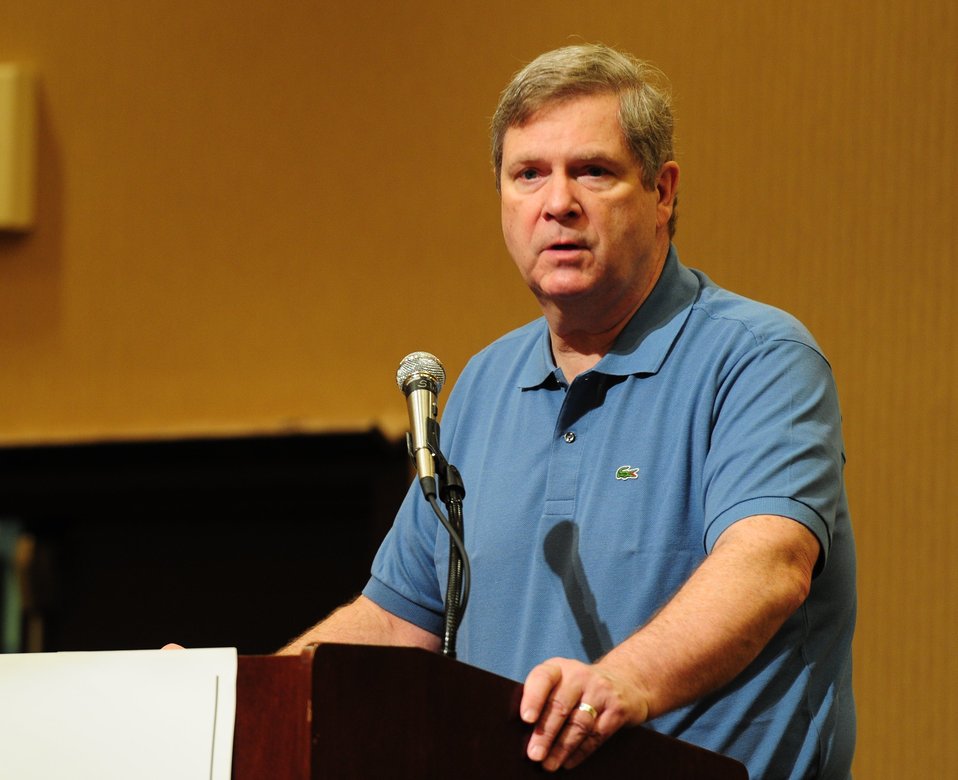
Agriculture Secretary Tom Vilsack speaks at the Iowa Farm Bureau event at the Sheridan Waikiki, in Honolulu, Hawaii, on Sunday, January 8, 2012.